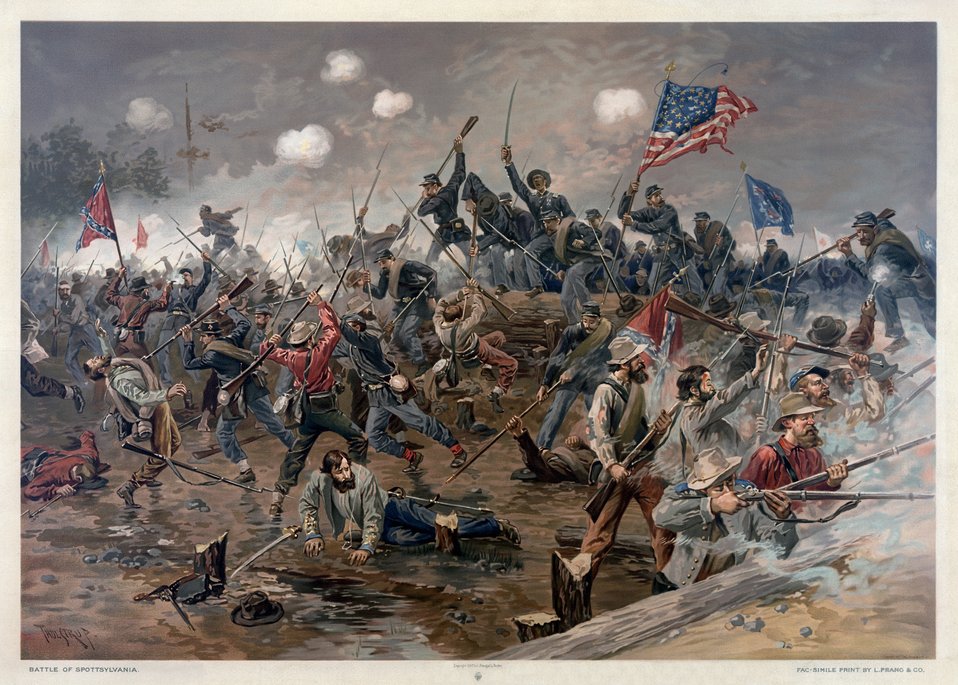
Battle of Spottsylvania. 1 print : chromolithograph